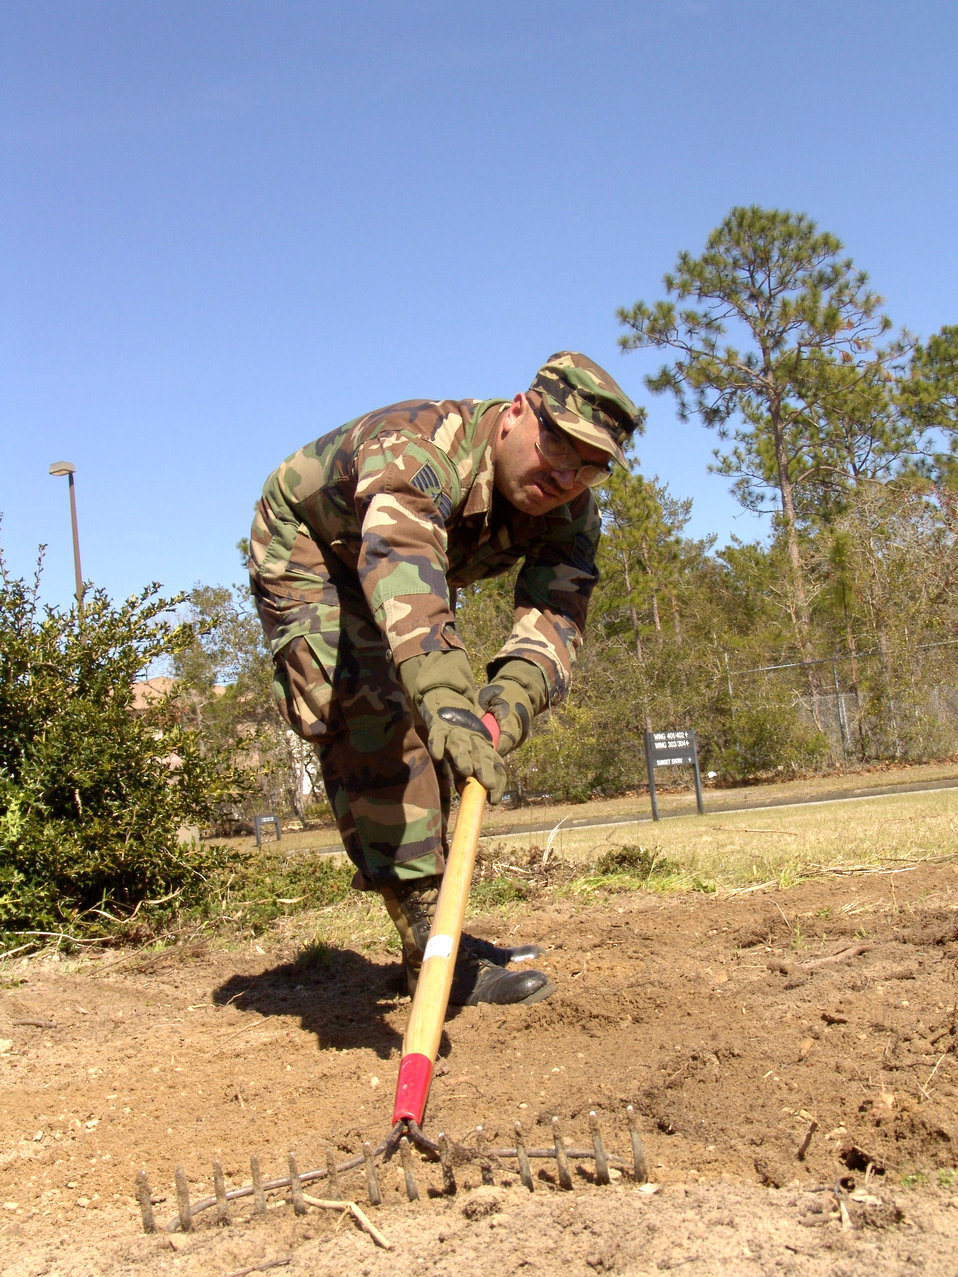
Eglin Airmen go to war with stumps, trees

SHALIMAR, Fla. -- Tech. Sgt. James Trefurt levels the ground where a stump was removed. The tree fell on the side of a house at Bob Hope Village here. He and other instructors with the 96th Ground Combat Training Squadron at nearby Eglin Air Force Base cut up fallen trees and pulled 18 stumps, saving the village more than $2,000. Hurricane Ivan downed hundreds of trees on the property and caused more than $300,000 in damage.